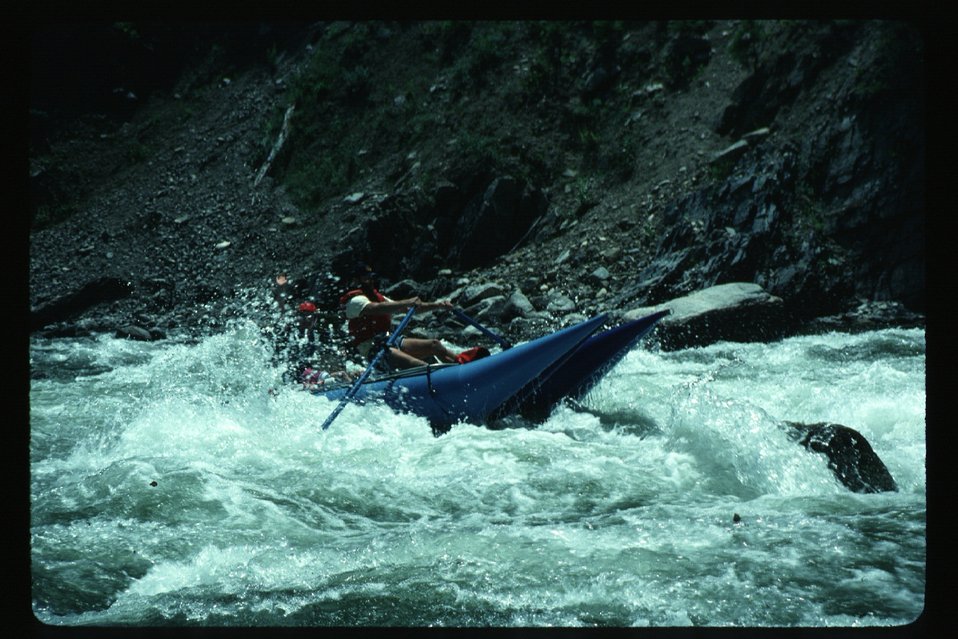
Kayaker in white water Kayaking Four Rivers Field Office LSRD Lower Snake River District